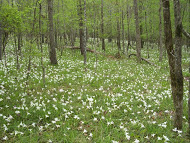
Fringed campion

Scientific name: Silene polypetala
Status: Endangered